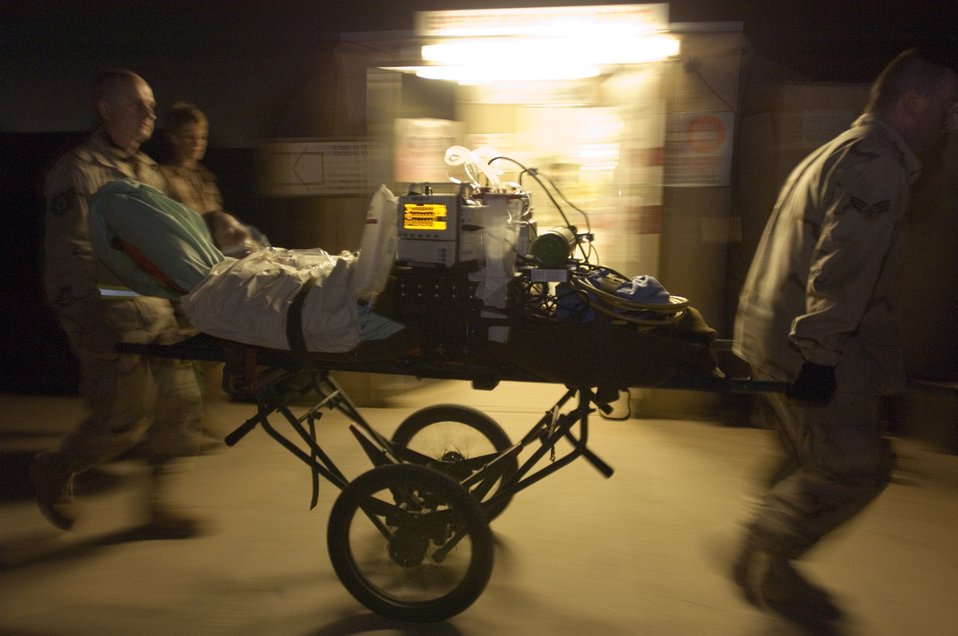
Medical teams provide priceless gift

Contingency aeromedical staging facility team members prepare a critical-care patient Feb. 14 for transport on C-17 Globemaster III to Landstuhl, Germany, where he will receive further care for his wounds at Balad Air Base, Iraq.